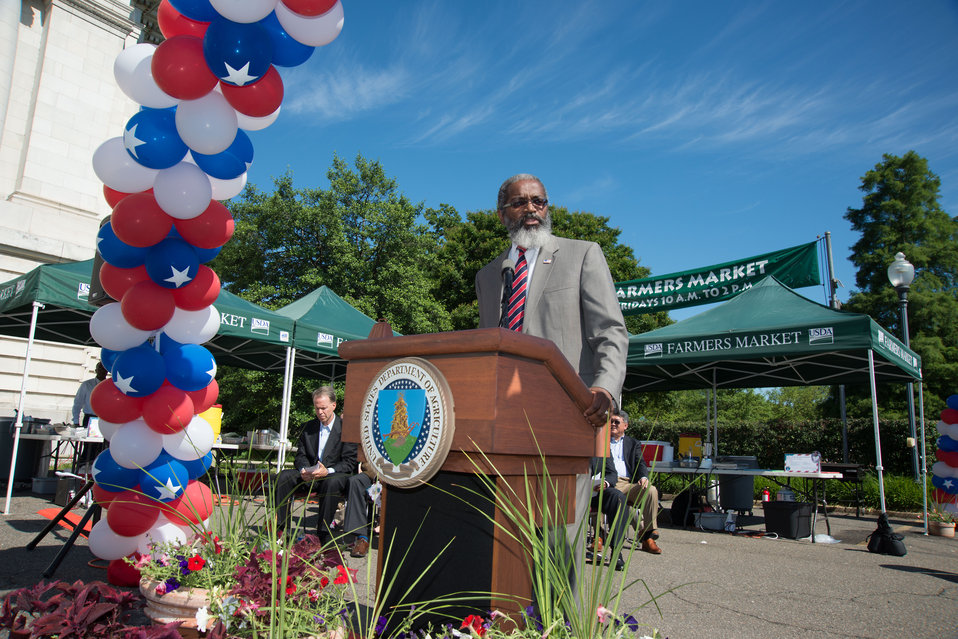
U.S. Department of Agriculture (USDA) Department Administration (DA) Assistant Secretary Gregory L. Parham speaks at the opening USDA’s 2014 Farmers Market in the east parking lot of USDA in Washington, D.C. on Friday, Jun. 6, 2014.